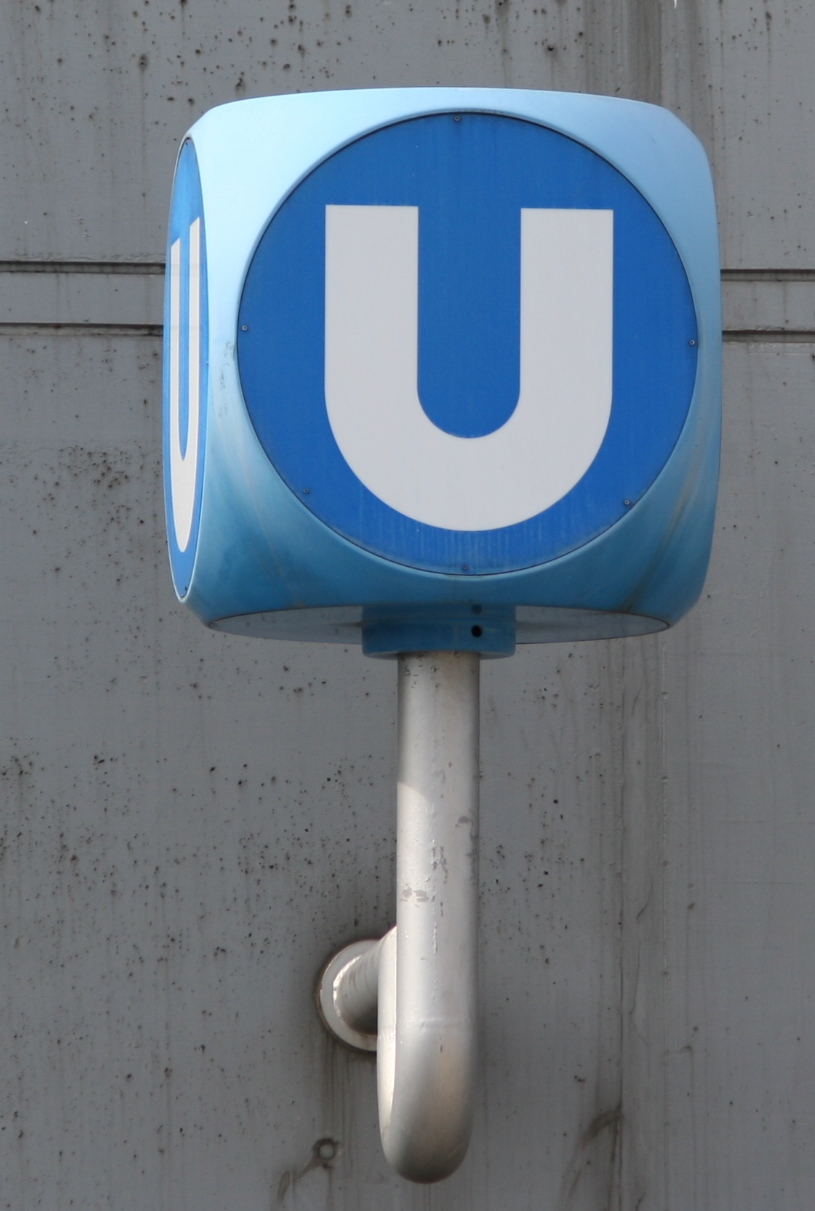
Deutsch: U-Bahn Zeichen in Wien bei der Station Spittelau. Kennzeichnung der Stationen der Wiener U-Bahn. Italiano: Insegna della U-Bahn.